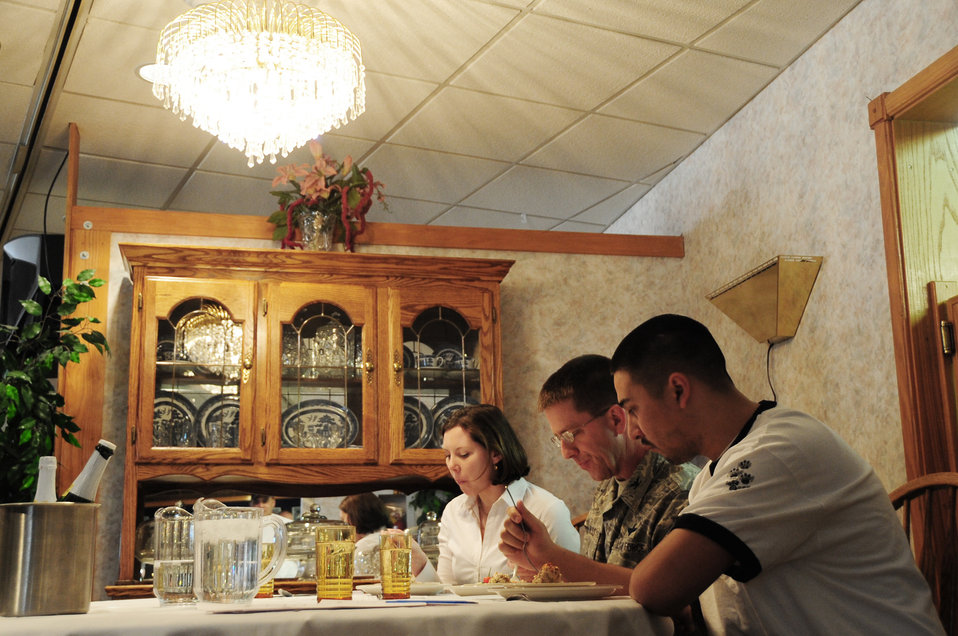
Ellsworth Airmen participate in cooking competition

Julie Oberlander (left to right), Col. Steven Hiss and Josh Nguyen judge all the competitors dishes during the